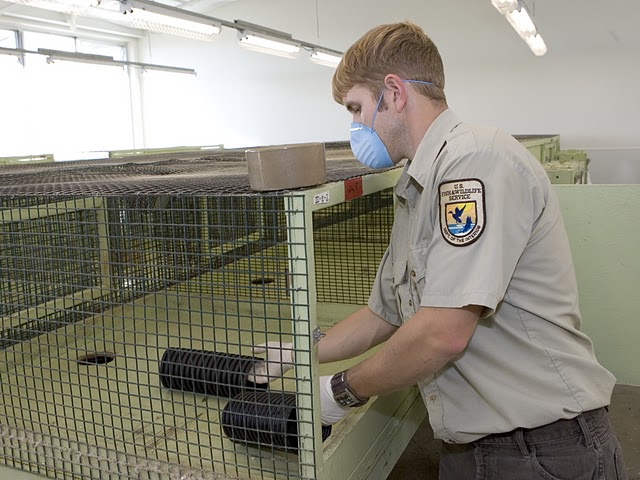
National Black-footed Ferret Conservation Center